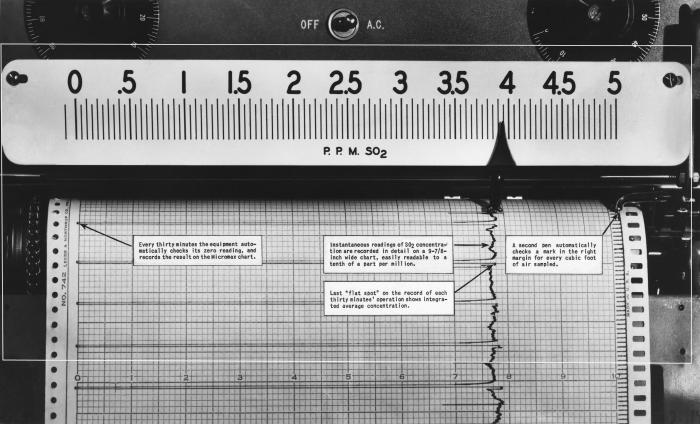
This historical photograph was provided by the Center for Disease Control's (CDC), National Institute for Occupational Safety and Health (NIOSH). Reprinted from the February, 1951, 'Industrial Hygiene Newsletter'. The image depicted an apparatus designed to measure sulfur dioxide (SO2) concentrations in the air. This gas is naturally produced as a byproduct of volcanic activitiy, but more importantly, is a byproduct of many industrial plant activities, where the combustion of coal and various petroleum energy sources takes place. Sulfur dioxide released into the atmosphere, when combined with nitrogen dioxide (NO2), gives rise to sulfuric acid (H2SO4), whereupon, in the natural environment, gives rise to the formation of 'acid rain'. In the industrial setting, SO2 causes eye and respiratory tract irritation.